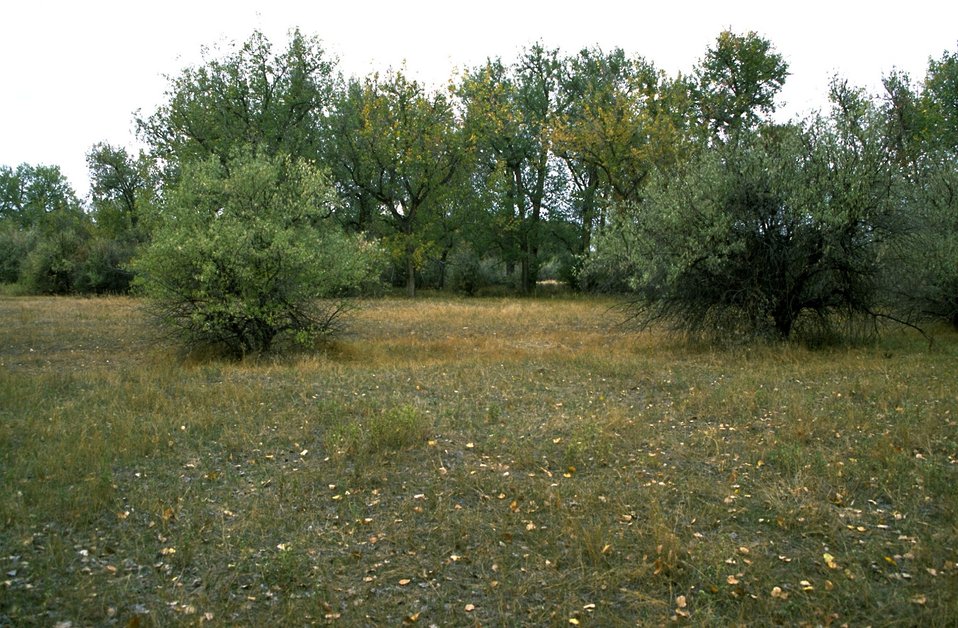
Trees and grass at Howrey Island Recreation Area